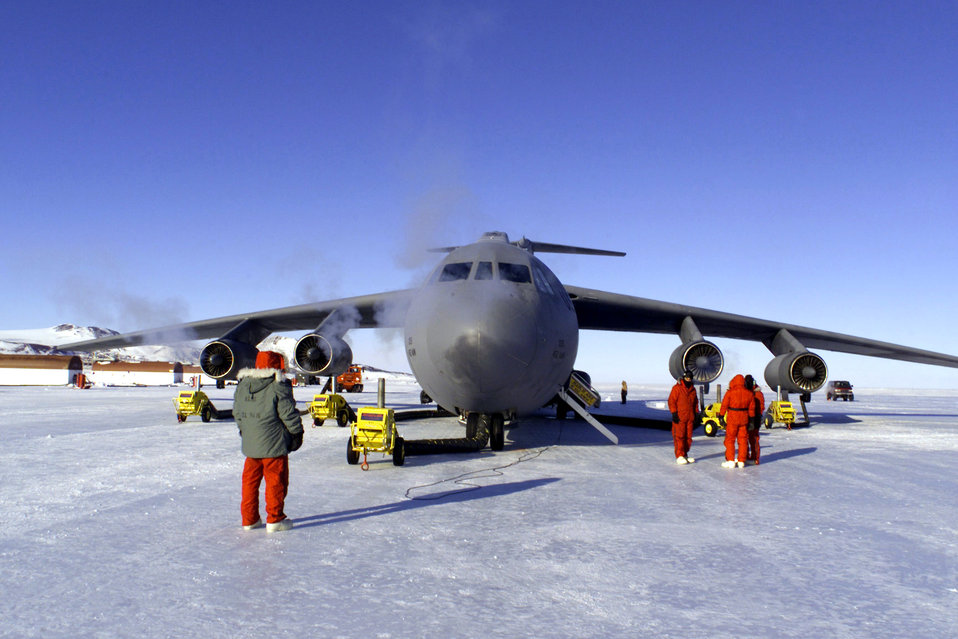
Reservists support Antarctic mission

MCMURDO STATION, Anartica -- A C-141C Starlifter is unloaded on an ice runway at McMurdo Station, Antarctica. Engine and brake heaters keep aircraft parts from freezing while the plane is unloaded. The Starlifter crew brought cargo and supplies from Christchurch, New Zealand, during Operation Deep Freeze. Deep Freeze is a joint military operation of the U.S. Armed Forces and the New Zealand Defence Forces, providing logistic support for the U.S. National Science Foundation's Antarctic Program.